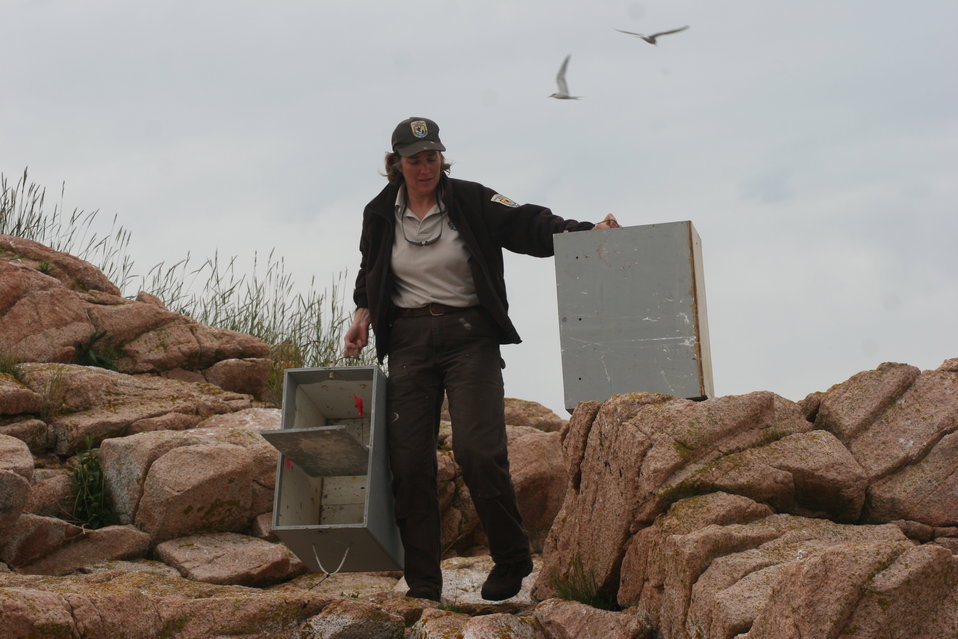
FWS Worker With Capture Boxes